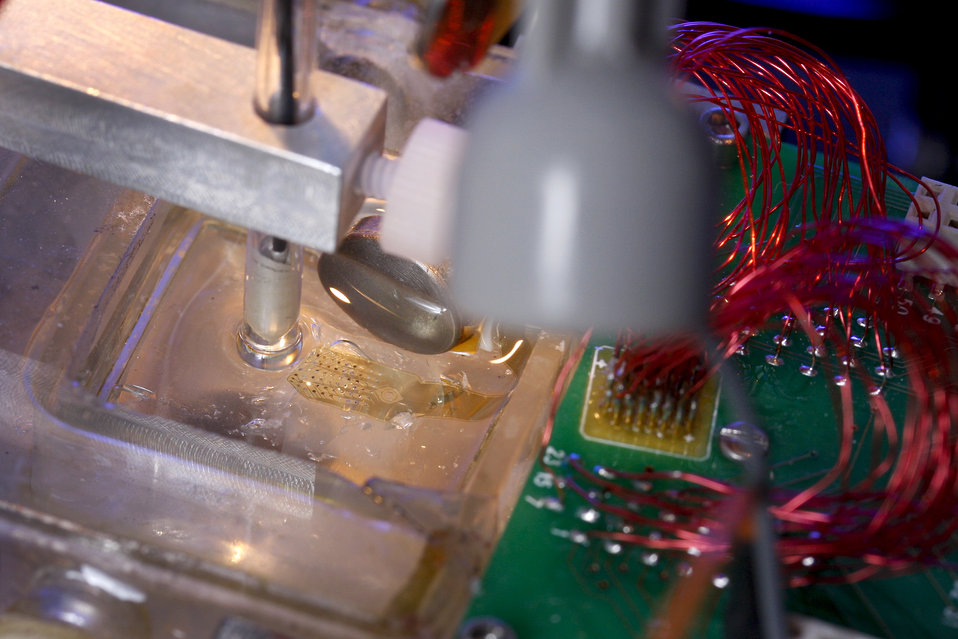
The Artificial Retina Project at Oak Ridge National Laboratory.

The U.S. Department of Energy's Artificial Retina Project is a collaborative, multi-institutional effort to develop an implantable microelectronic retinal prosthesis that restores useful vision to people blinded by retinal diseases. The ultimate goal of the project is to restore reading ability, facial recognition, and unaided mobility in people with retinitis pigmentosa and age-related macular degeneration. The research team includes six DOE national laboratories, four universities and private industry.